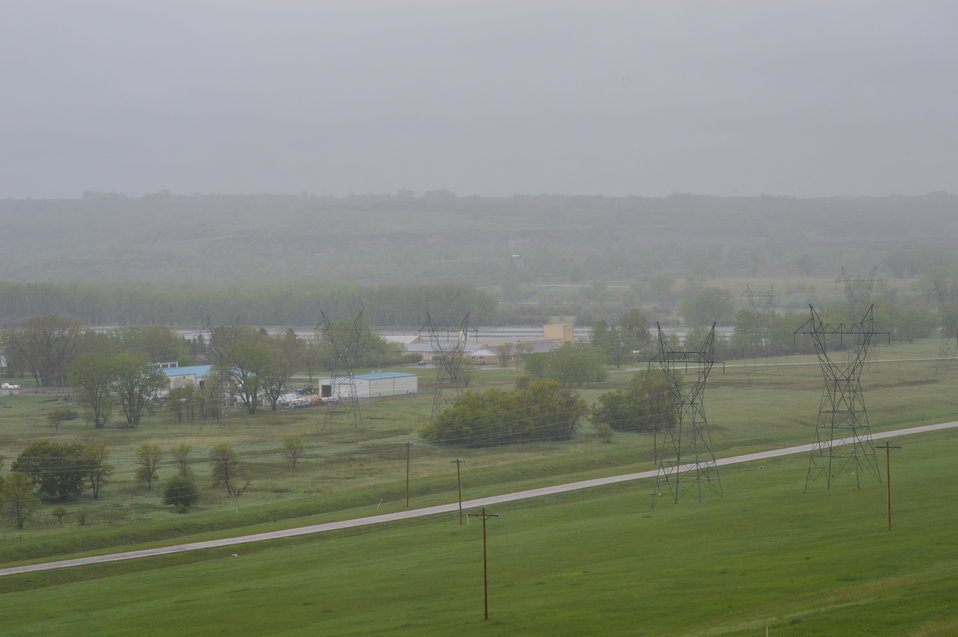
View from the road above Garrison Dam NFH

Garrison Dam National Fish Hatchery in North Dakota.